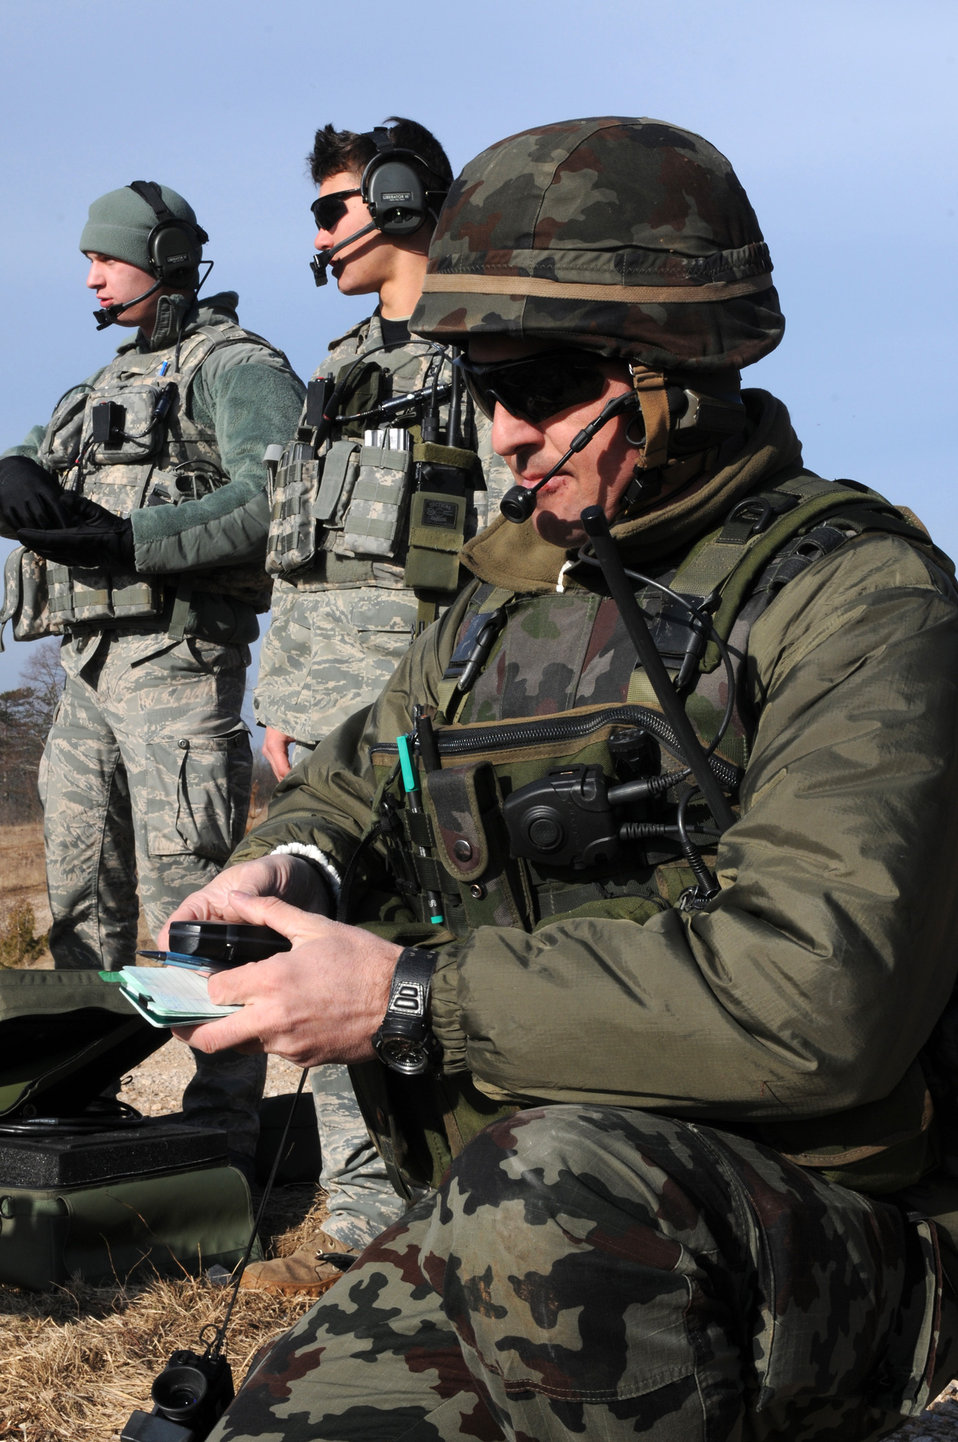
US, Slovenian TACP training

Slovenian army Staff Sgt. Rudolf Rot tracks current position coordinates during a NATO coalition combat capability training exercise at Pocek Range Feb. 3, 2011, in Postojna, Slovenia. The exercise consisted of close-air-support training between Airmen from Aviano Air Base, Italy, and Slovenian army joint terminal attacks controllers and tactical air control party operators, as well as Slovenian PC-9M aircrews. Sergeant Rot is a 1st Brigade tactical air control party operator.